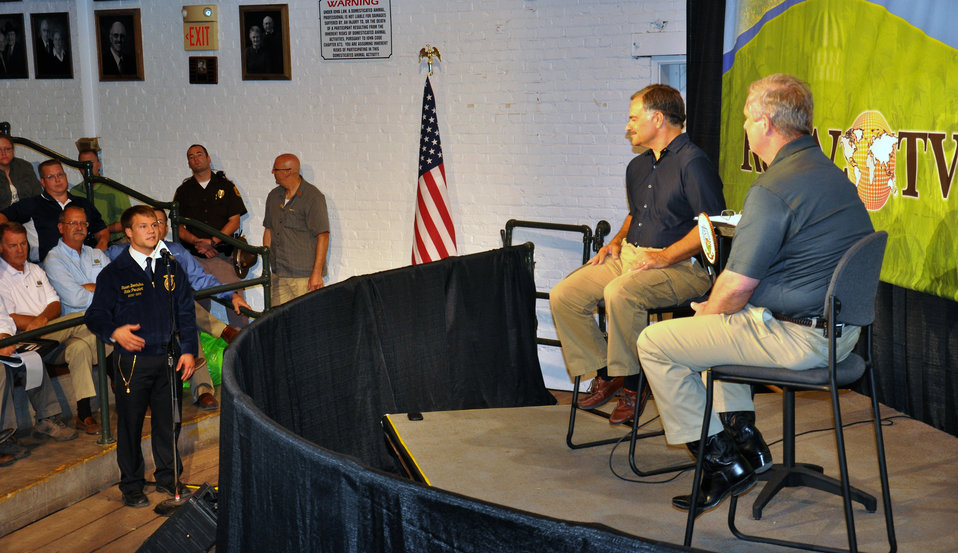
RFD-TV Host Max Armstrong (left) and USDA Agriculture Secretary Tom Vilsack (right) take a question from an Iowa FFA chapter member during a town hall meeting on August 16, 2012, at the Iowa State Fair in Des Moines, Iowa, on Thursday, August 16, 2012.

The Secretary was in Iowa As part of continuing steps by the Obama Administration to assist livestock producers in response to the historic drought. USDA will utilize nearly $16 million in financial and technical assistance to immediately help crop and livestock producers in 19 states to cope with the adverse impacts of the historic drought. In addition, USDA will initiate a transfer of $14 million in unobligated program funds into the Emergency Conservation Program. These funds can be used to assist in moving water to livestock in need, providing emergency forage for livestock, and rehabilitating lands severely impacted by the drought. Together these efforts should provide nearly $30 million to producers struggling with drought conditions.Most recently, Secretary Vilsack signed disaster designations for an additional 44 counties in 12 states including Iowa as primary natural disaster areas due to damage and losses caused by drought and excessive heat.